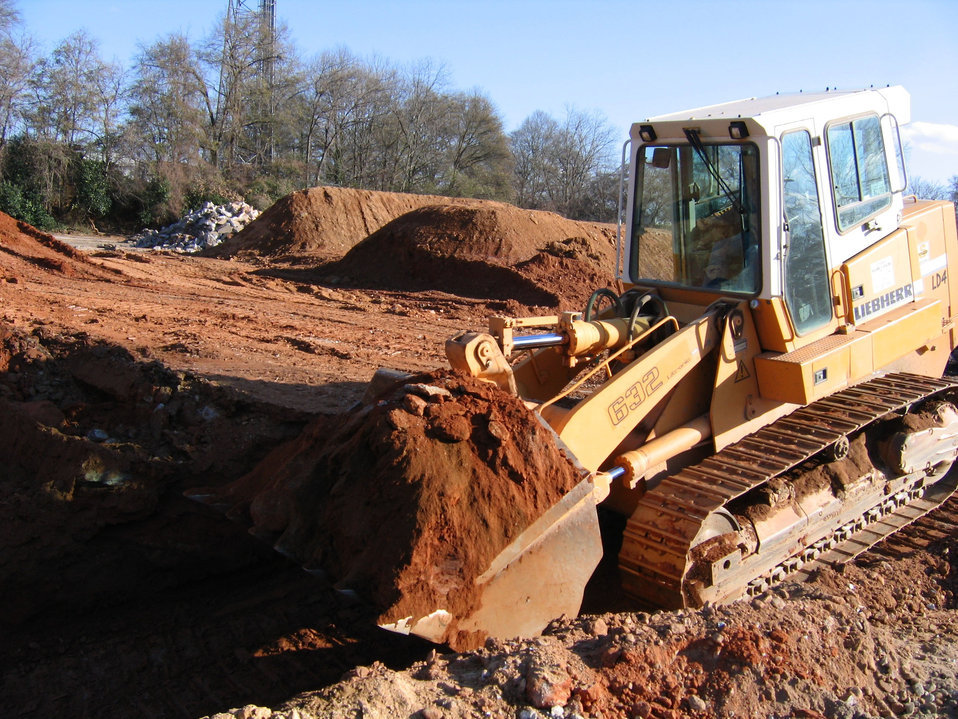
BEFORE: Atlanta, GA

EPA funding was used to remove hazardous substances and dispose of underground petroleum storage tanks at this Atlanta, GA site.